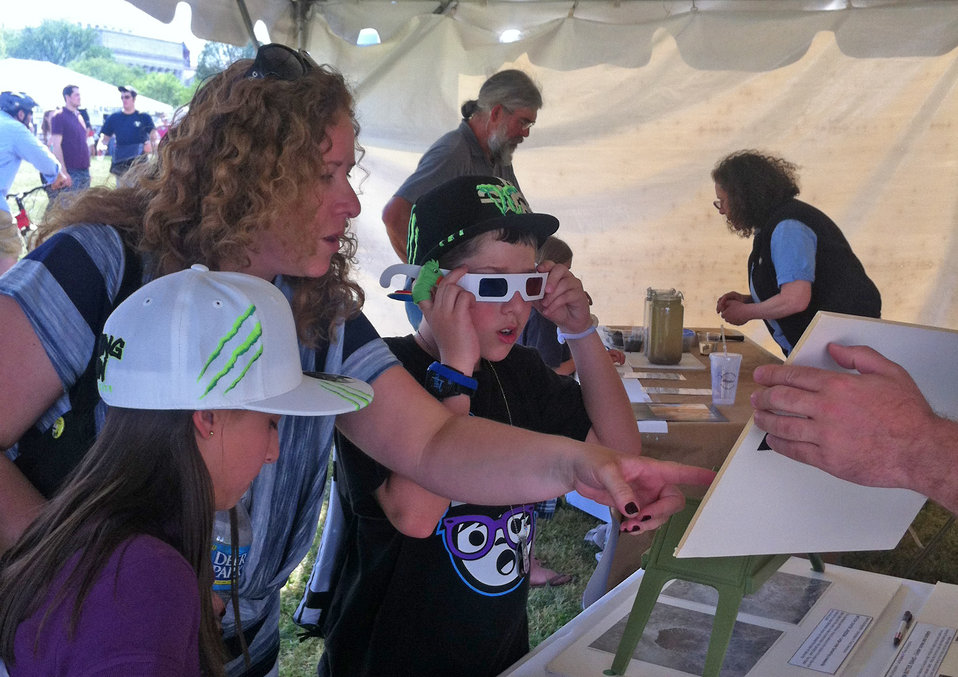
Visitors check out the U.S. Department of Agriculture (USDA) Natural Resources Conservation Service (NRCS) display for Earth Day 2012 on the National Mall in Washington, D.C., on Sunday, April 22, 2012.